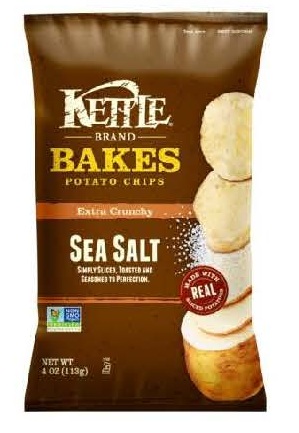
RECALLED - Kettle Brand Bakes Sea Salt

February 13, 2014 – Product Recall – Kettle Brand Voluntarily Recalls Limited Run of Bakes Sea Salt Potato Chips Due to Potential Milk Allergen.